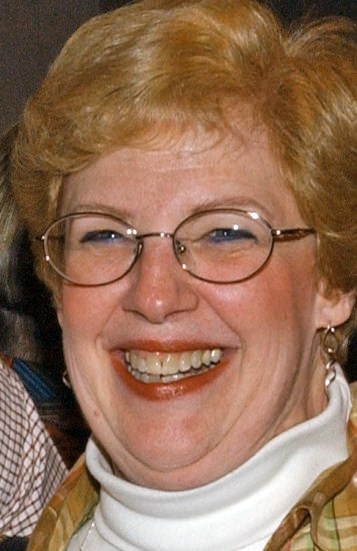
Civilian retirement

Nancy Beeson, confidential assistant to Secretary of the Air Force Administrative Assistant Bill Davidson, is retiring Jan. 29 after nearly 49 years of federal service. She is one of the Air Force's longest serving civilians.